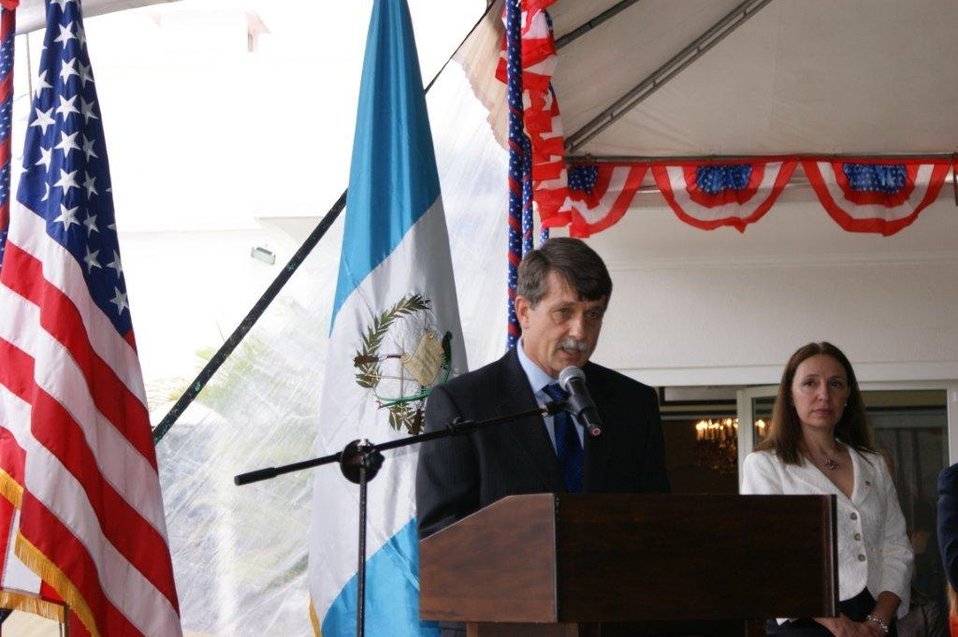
July 4th Celebration at U.S. Embassy in Guatemala

U.S. Ambassador to Guatemala Stephen McFarland delivers remarks at the U.S. Independence Day celebration at his residence in Guatemala City, Guatemala, on July 2, 2010.